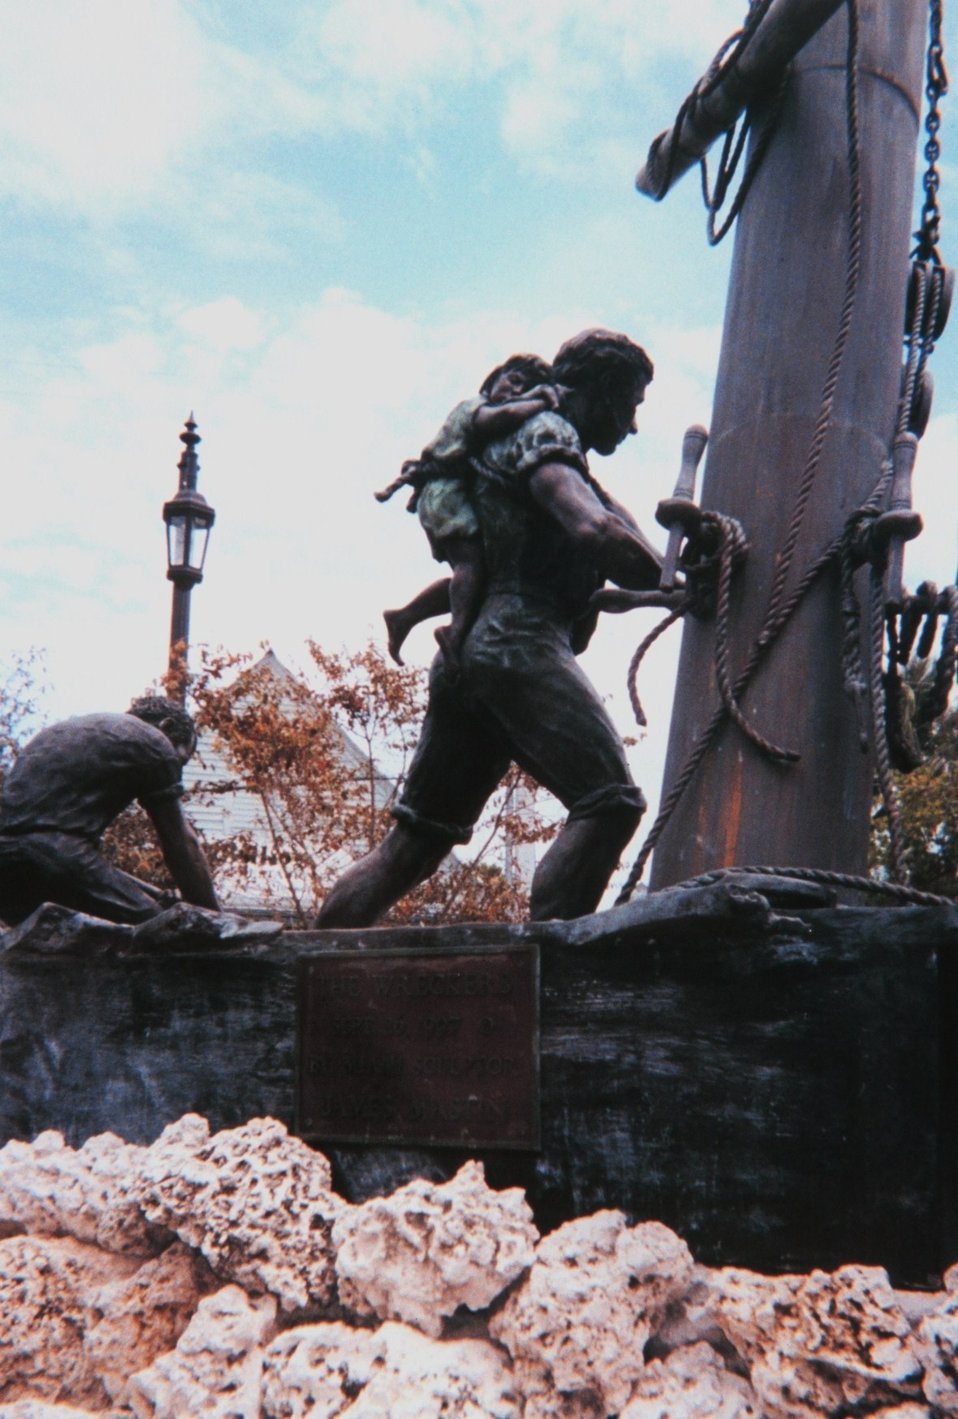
The 'Wrecker Memorial' at Key West. Wreckers flocked to the scene of shipwrecks hoping to salvage the cargoes for their own enrichment. However, their first legal priority was to save lives.